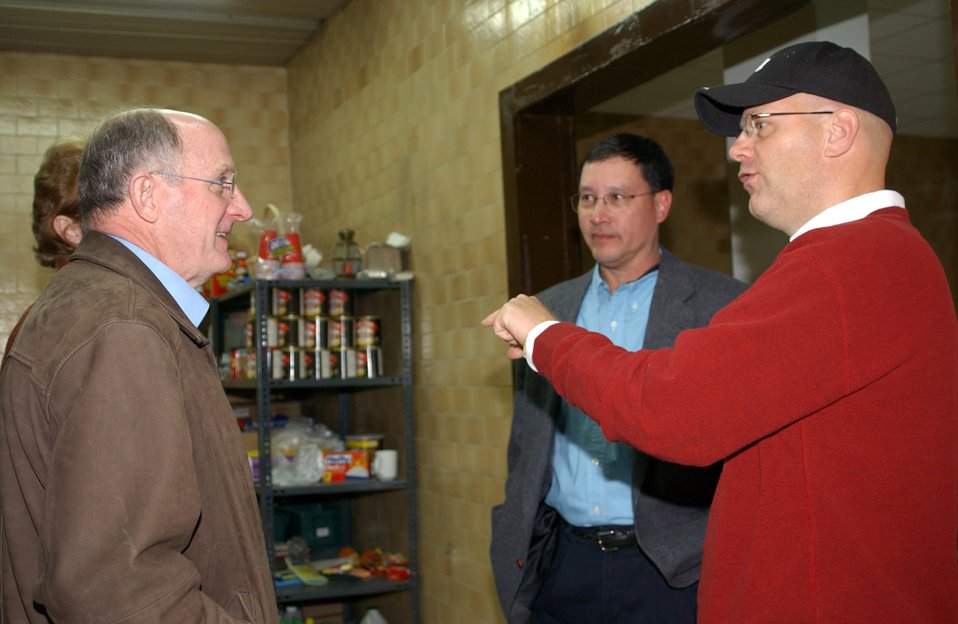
Chief of chaplains visits Incirlik

Chaplain (Maj. Gen.) Charles C. Baldwin (left) speaks with Col. Murrell Stinnette before the National Prayer Observance dinner Jan. 26 at Incirlik Air Base, Turkey. Chaplain Baldwin, the Air Force chief of chaplains, was the guest speaker at the observance after the dinner. Colonel Stinnette is the 39th Air Base Wing commander.